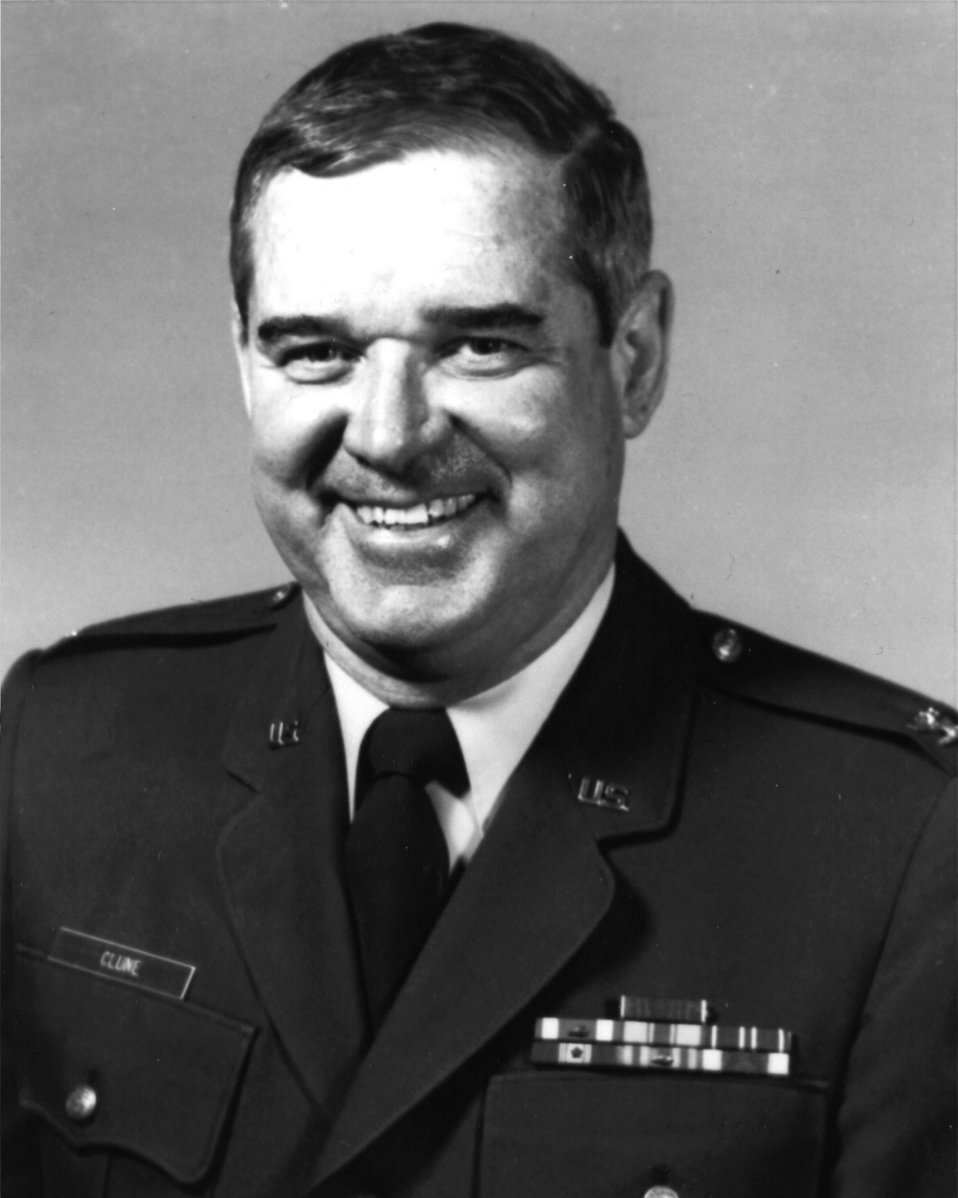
Academy announces inaugural class into athletic hall of fame

Retired Col. John Clune, an All-American basketball player, is in the inaugural class being inducted into the Air Force Academy Athletic Hall of Fame. Among his achievements was serving as president of the National Association of Collegiate Directors of Athletics. He lost a battle with bone cancer in 1992. In 1993, the Cadet Field House basketball arena was dedicated in his honor.